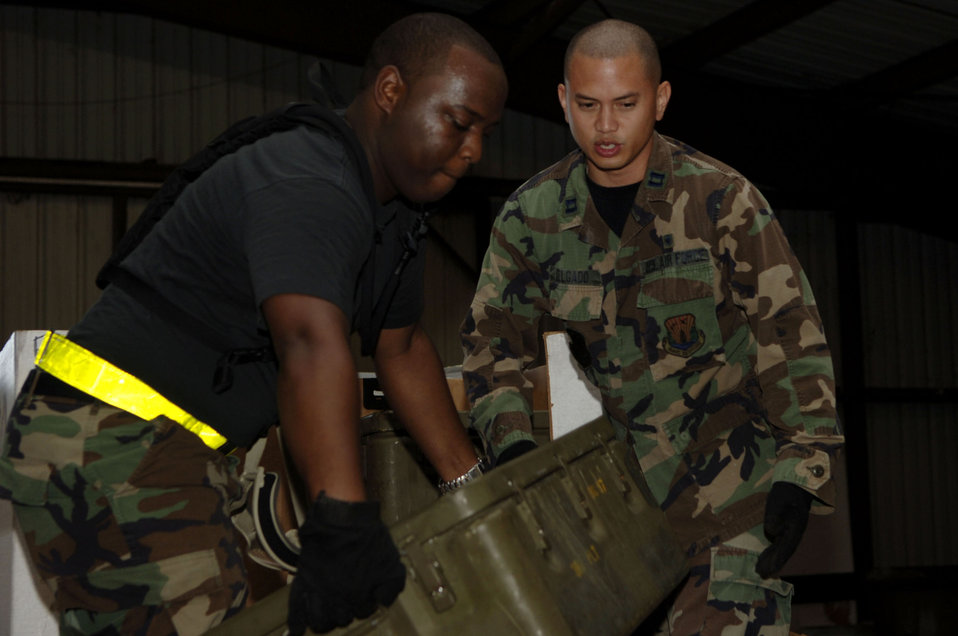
AMC aircraft, personnel supporting Hurricane Ike evacuations

Senior Airman Kenneth Alexander, left, and Capt. Alan Delgado unload medical supplies from a Humvee at Corpus Christi, Texas. The MASF team deployed to Texas to support Hurricane Ike evacuation efforts there. Captain Delgado and Airman Alexander are both members of a mobile aeromedical staging facility team from MacDill Air Force Base, Fla.